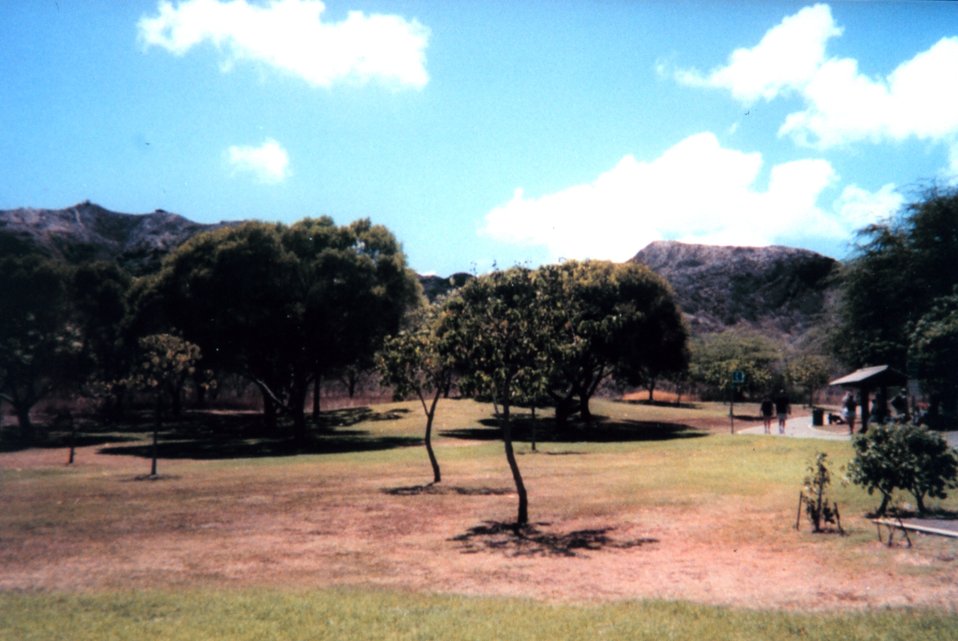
In the crater at Diamond Head State Park.